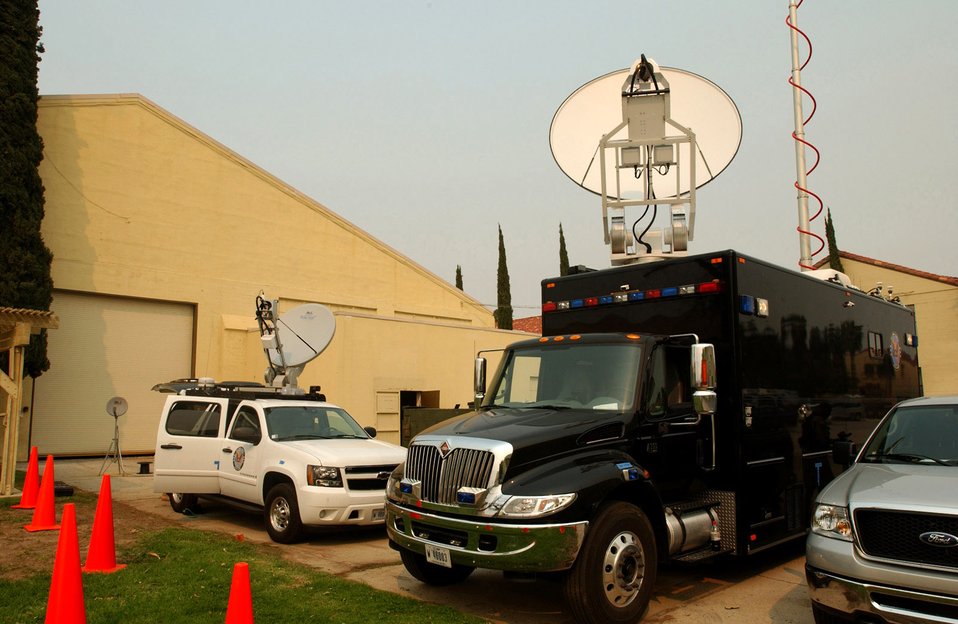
Wildfire command post stands up at March

The U.S. Army North from Fort Sam Houston in San Antonio shipped mobile command center vehicles that will assist command and control efforts of the ongoing relief operations in the aftermath of the California wildfires.